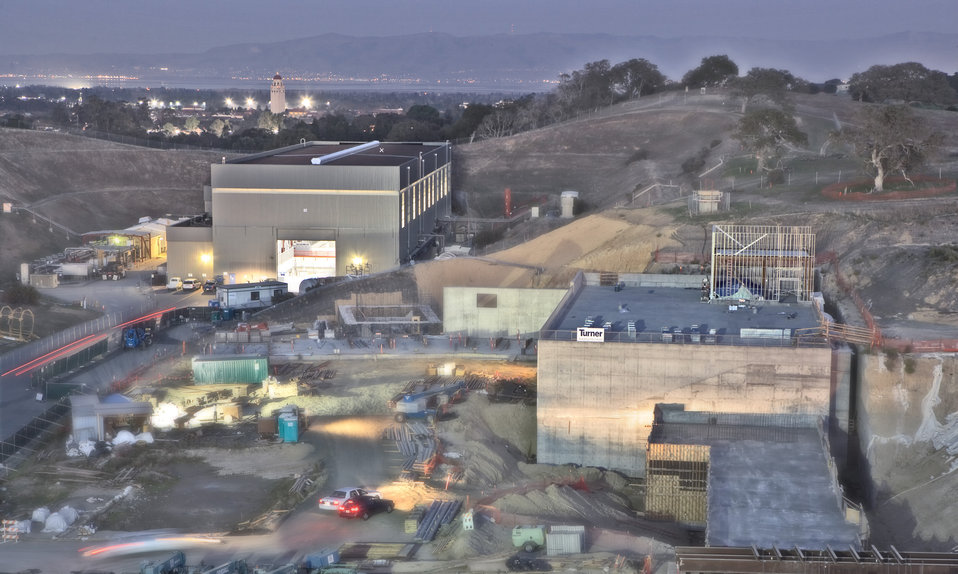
Looking east over the Linac Coherent Light Source (LCLS) construction site toward Stanford University and the San Francisco Bay.
The LCLS offers researchers the first-ever glimpse of high energy or 'hard' x-ray laser light produced in a laboratory. It will provide the world's brightest, shortest pulse of laser x-rays for scientist study. It will give scientists an unprecedented tool for studying and understanding the arrangement of atoms in materials such as metal, semiconductors, ceramics, polymers, catalysts, plastics and biological molecules, with wide-ranging intact on advances energy research and other fields.